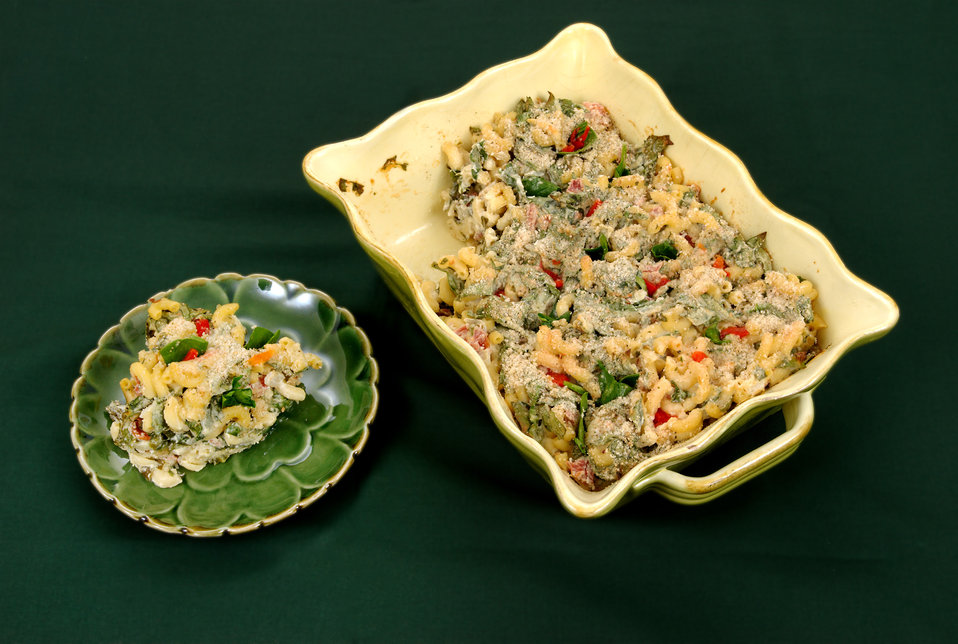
This photograph depicts a baking dish with a healthier food choice one might make, including more vegetables, and less-fattier ingredients than would be used in a dish of traditional macaroni and cheese. This platter contains a casserole of macaroni, spinach, red and yellow peppers, and parmesan cheese and tasty spices. Note the small plated serving of this dish.